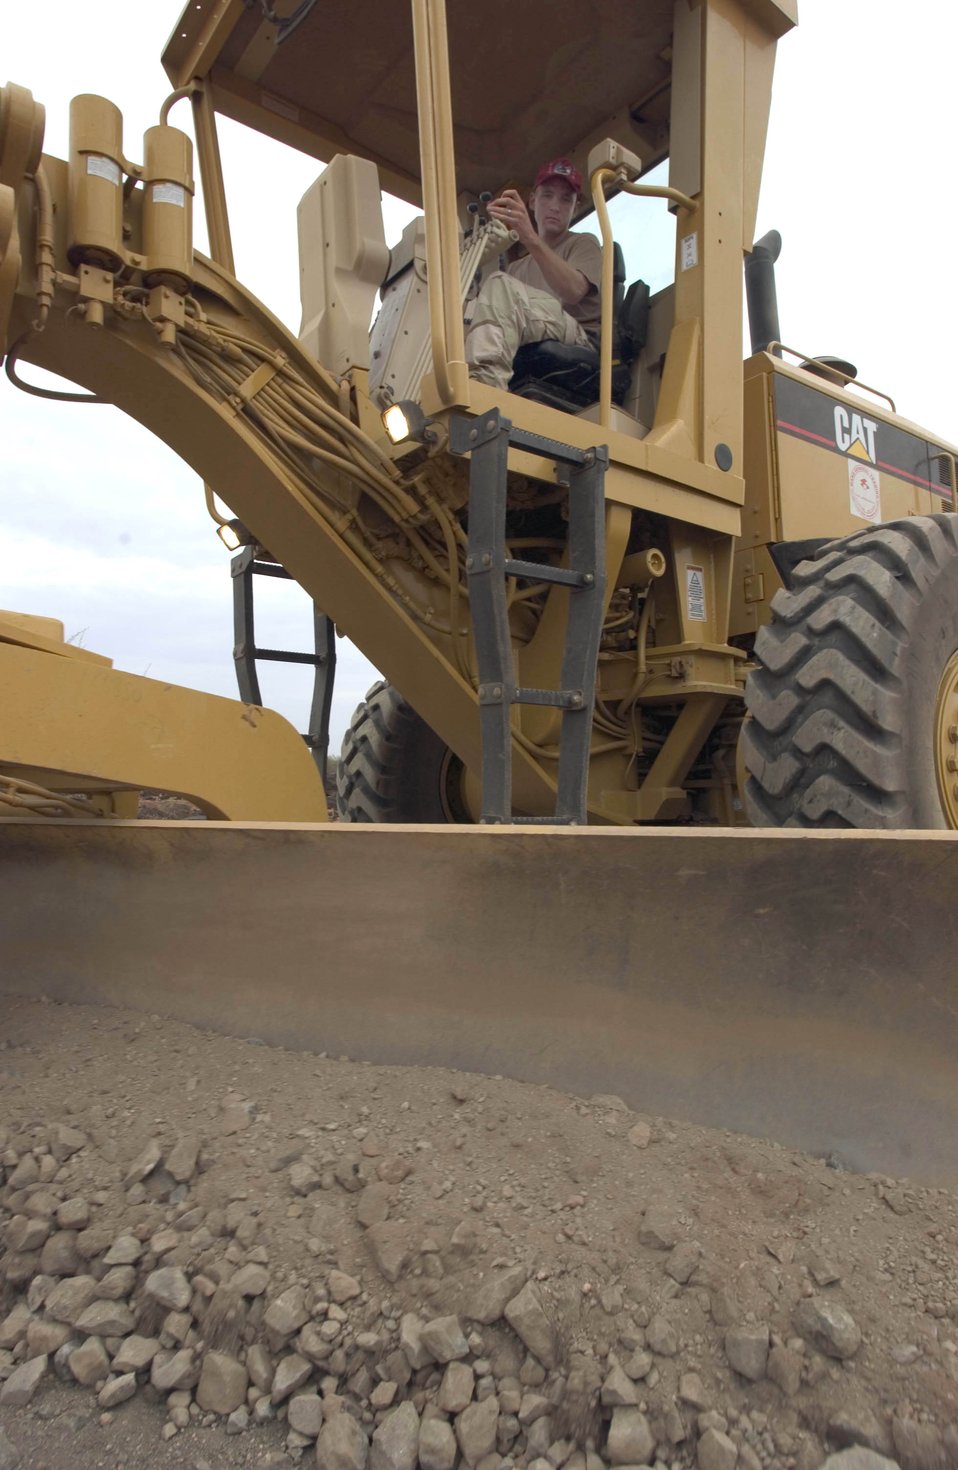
Building relationships one mile at a time

NEAR DJIBOUTI, Djibouti -- Staff Sgt. Matthew Hill drives a grader to level 10 miles of the Hol Hol road which connects the town of Hol Hol with Djibouti City. Sergeant Hill is a heavy equipment operator with the 823rd Expeditionary Red Horse Squadron here at Camp Lemonier. The squadron is assisting the Combined Joined Task Force -- Horn of Africa to establish a secure environment and enable regional stability. He is from Hurburt Field, Fla.